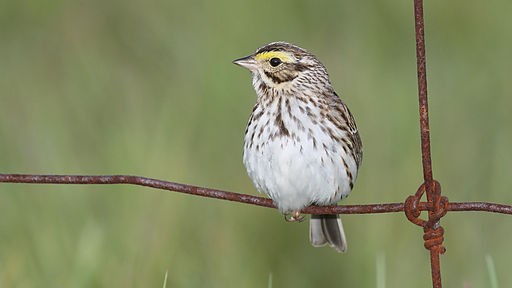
Savannah sparrow

Photo from WikimediaCommons